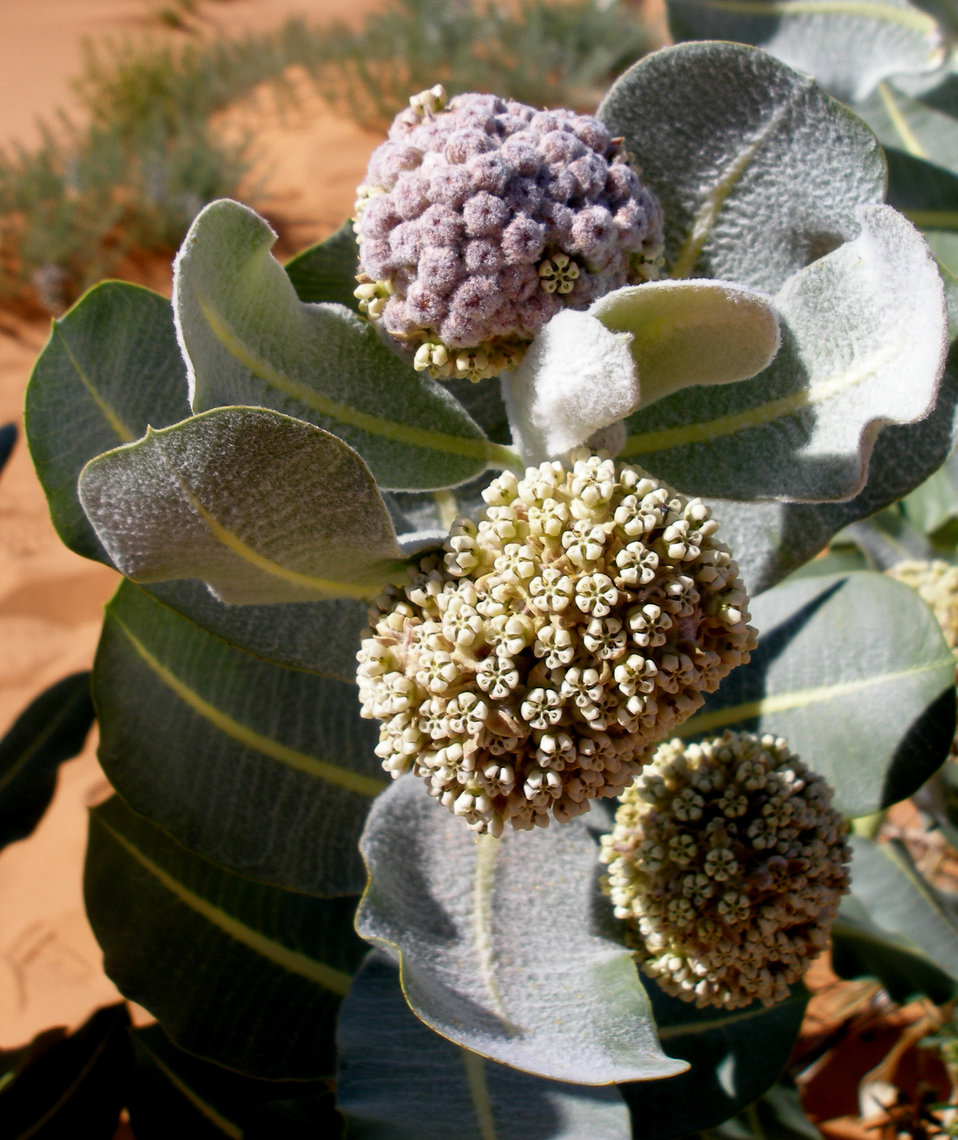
Welsh milkweed (Asclepias welshii)

This species is restricted to active sand dunes derived from Navajo Sandstone in sagebrush, juniper and Ponderosa pine communities between 5,000 and 6,230 ft. in elevation. It is endemic to Kane County, UT, and Coconino, Navajo & Apache counties, AZ. The Welsh milkweed is listed threatened.